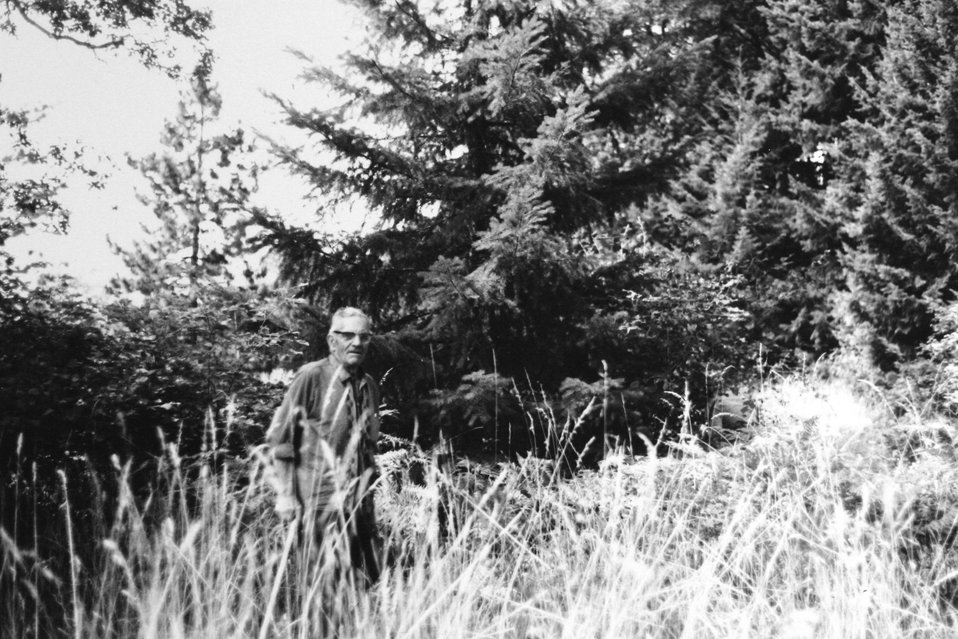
Ivin Billings at Big Meadows.